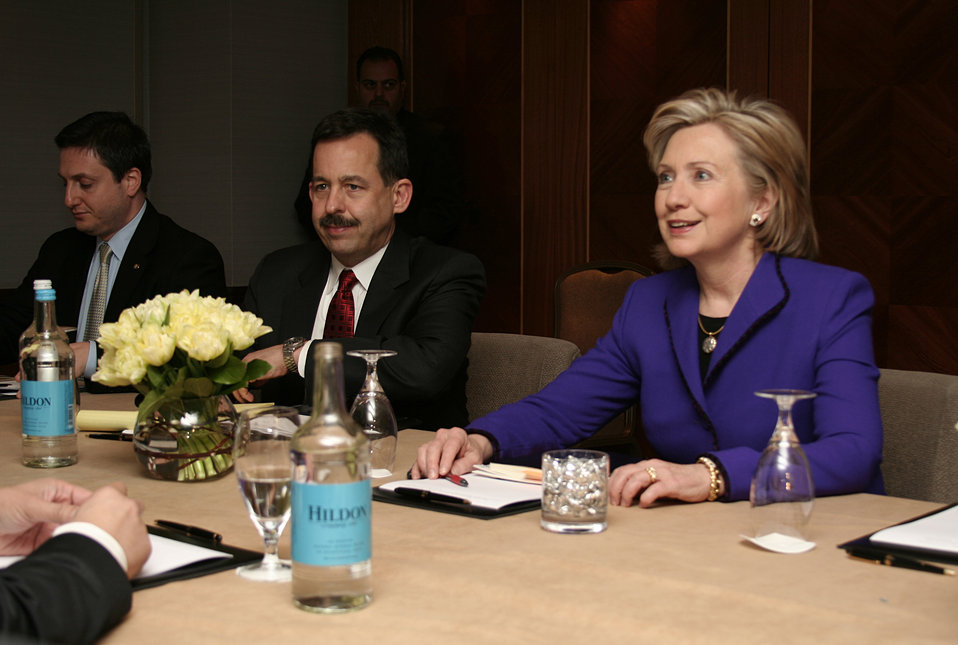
Secretary Clinton Meets With Indonesian Foreign Minister Natalegawa in London

U.S. Secretary of State Hillary Rodham Clinton meets with Indonesian Foreign Minister Marty Natalegawa in London, January 27, 2010.